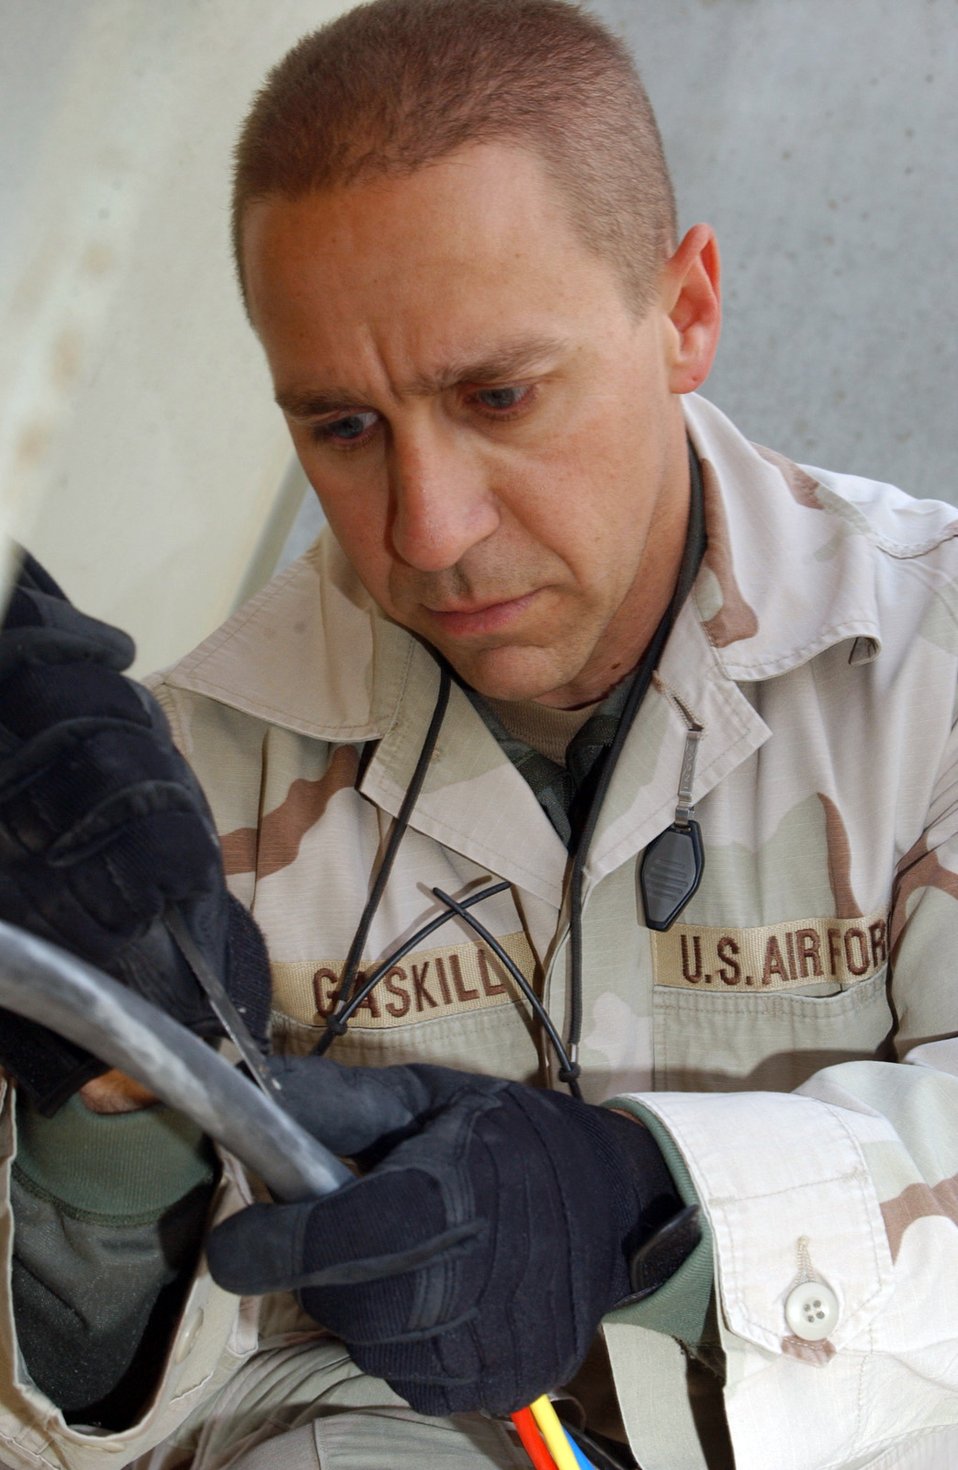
Wire service

ALI BASE, Iraq (AFPN) -- Heavy rains on Christmas Day seeped into and shorted out wiring that served half of the 407th Air Expeditionary Group headquarters building. Airmen from the 407th Expeditionary Civil Engineering Squadron's electric shop dug a 150-foot trench and ran fresh wire. Here, Master Sgt. John Gaskill, NCO in charge of the electric shop, adds distance to the strip length of the cable so there's plenty of room to work with when the separate wires are routed to the correct post in the breaker box.